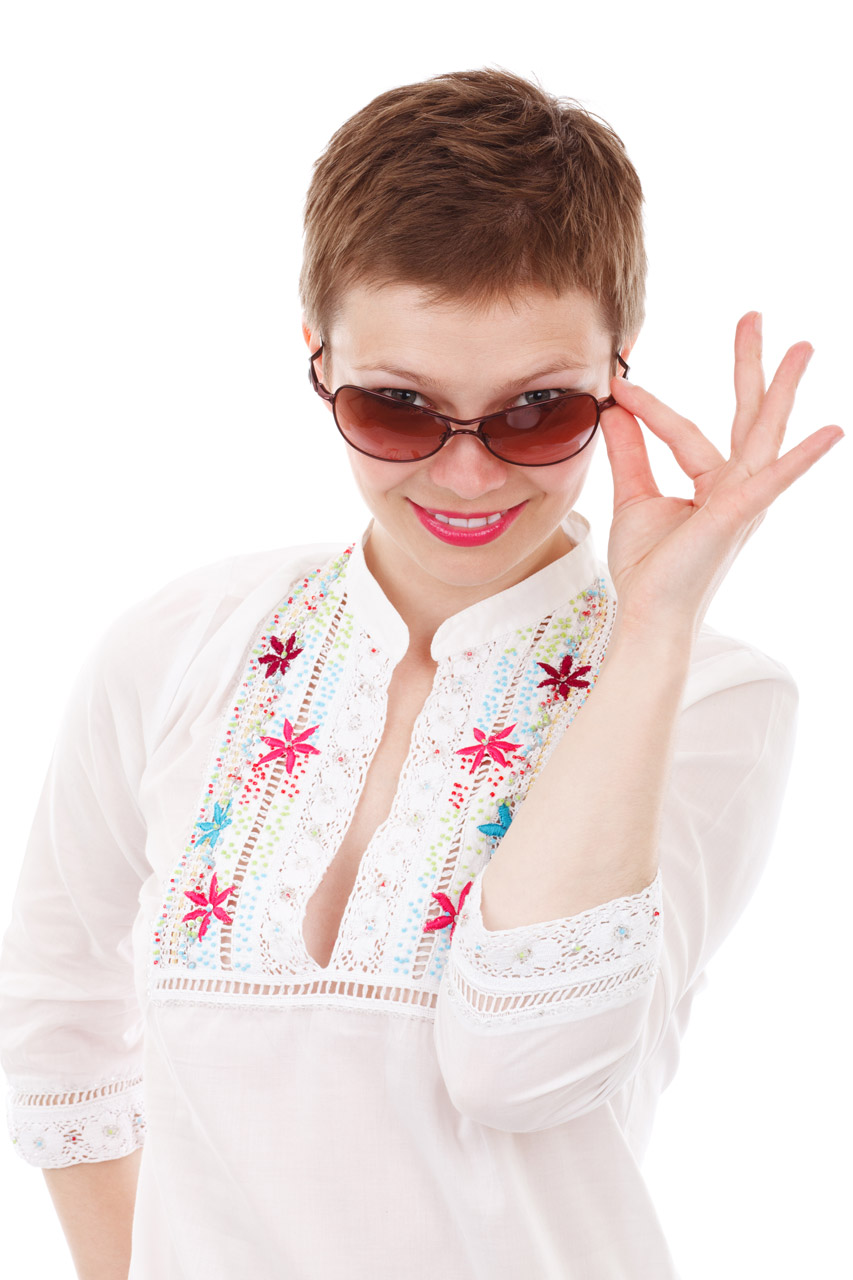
Young woman looking

Young smiling woman looking through sunglasses in summer clothes isolated on white background.